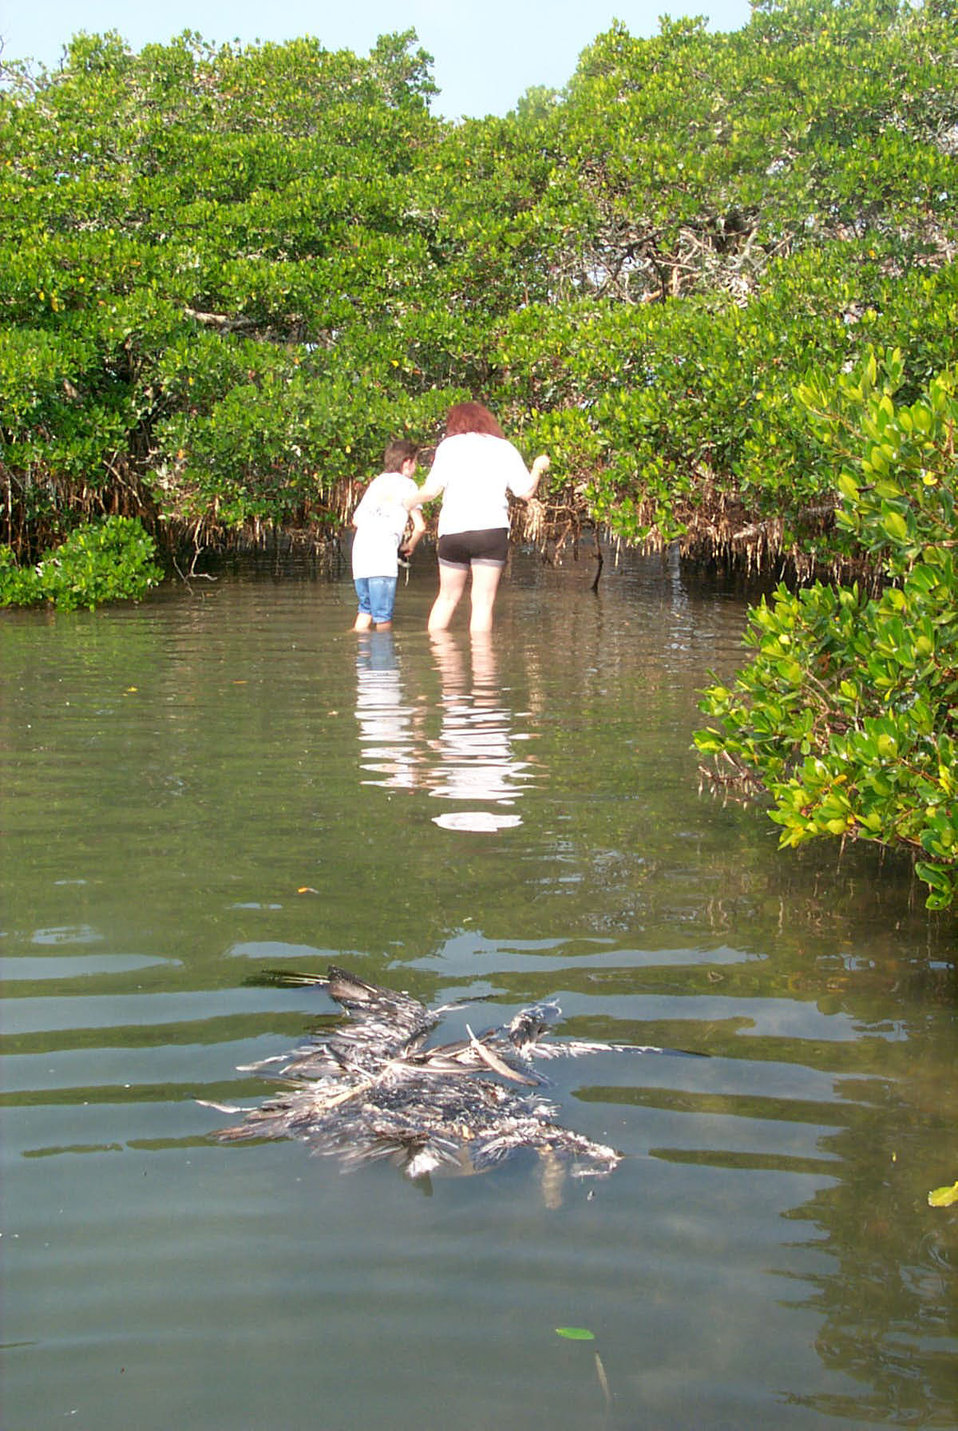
Volunteers hunt for discarded monofilament in the roots and branches of mangroves. A dead victim, a brown pelican floats in the water nearby.